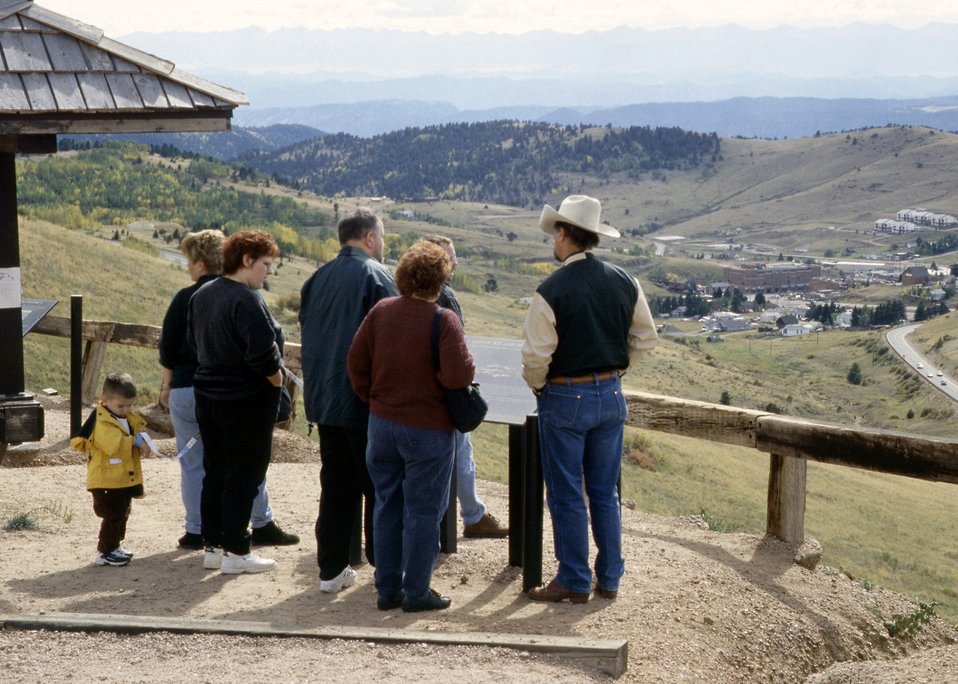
Wilbur Loop